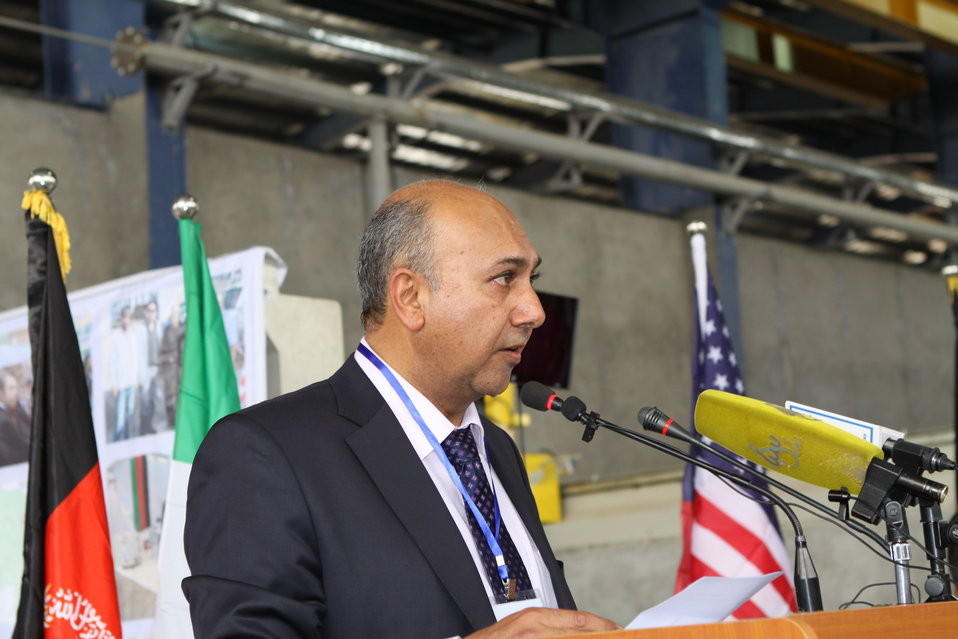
100525 Hirat Marble Conference 139